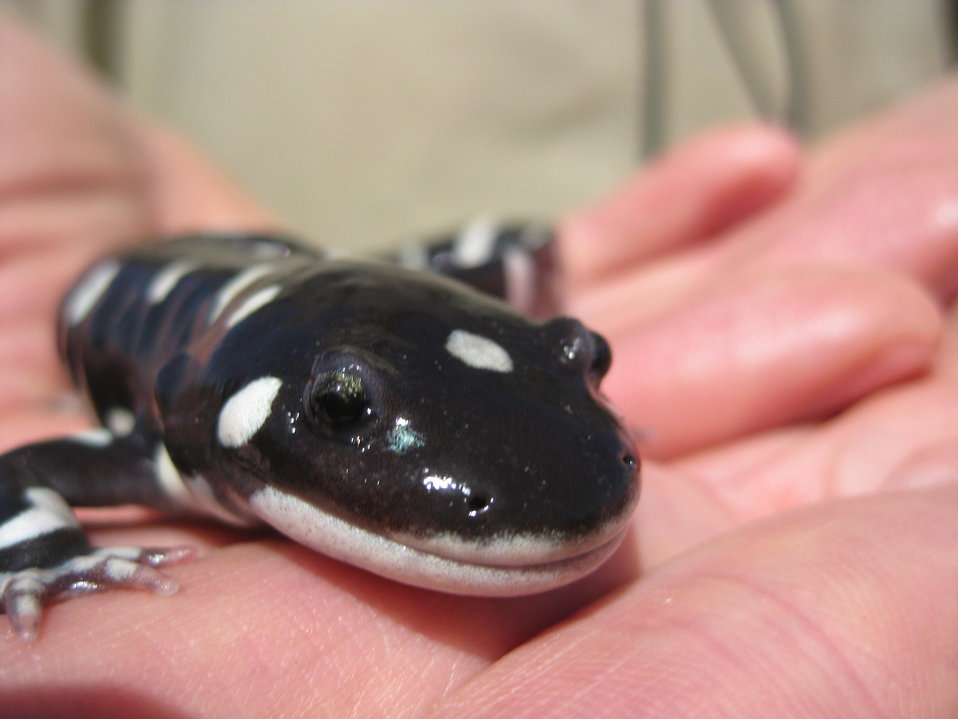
Endangered California Tiger Salamander